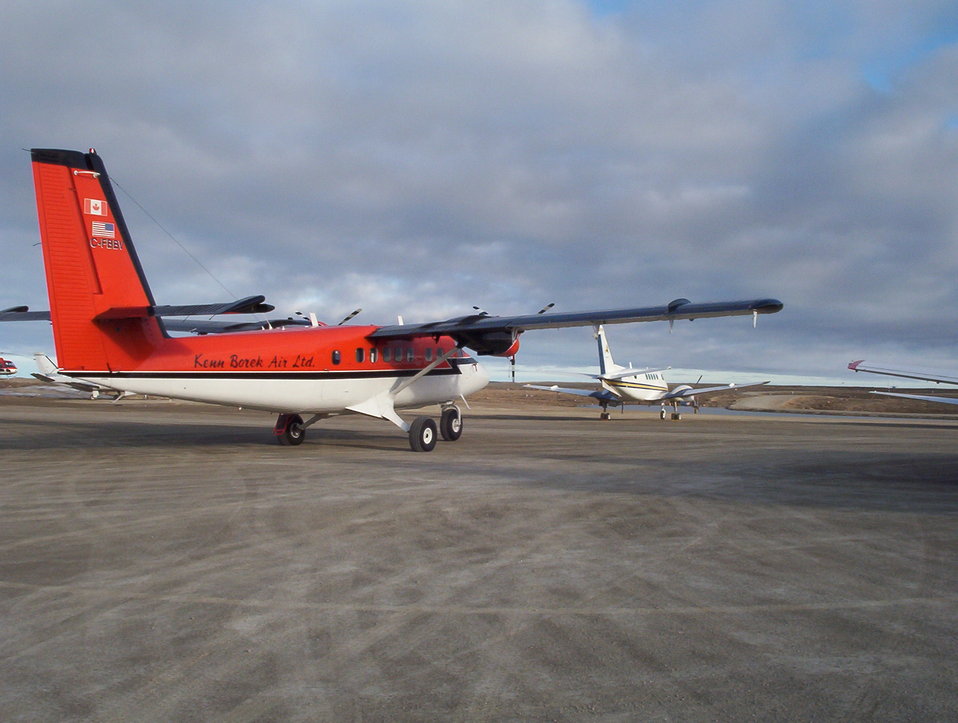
C-FBBV Kenn Borek Air Ltd. de Havilland Twin Otter (DHC-6) 300 Series at Cambridge Bay Airport, Nunavut, Canada